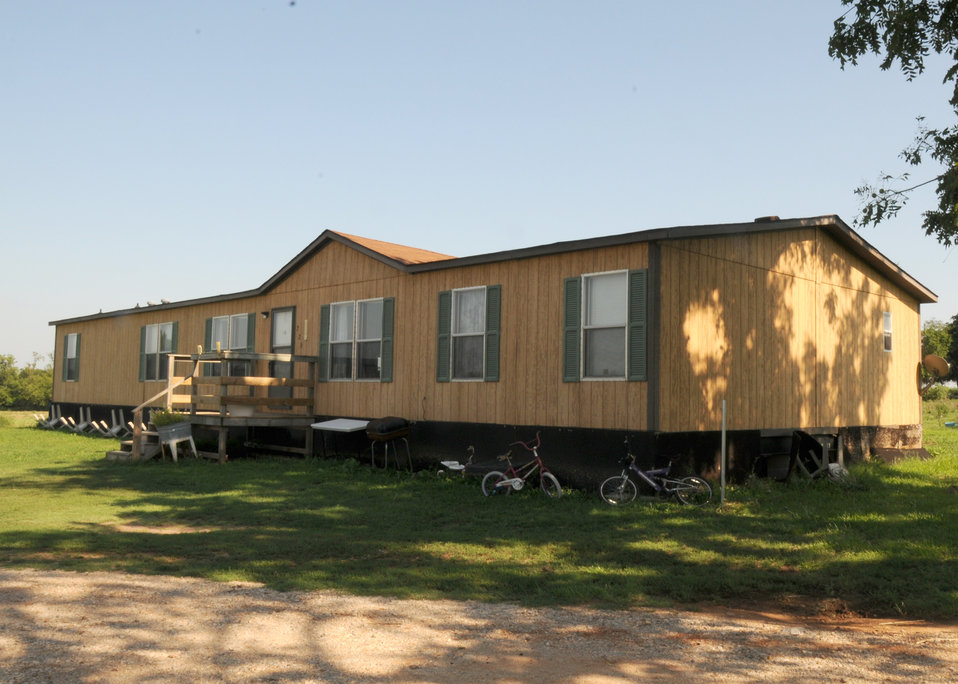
The modular home of the Burris family in McLoud, Oklahoma.